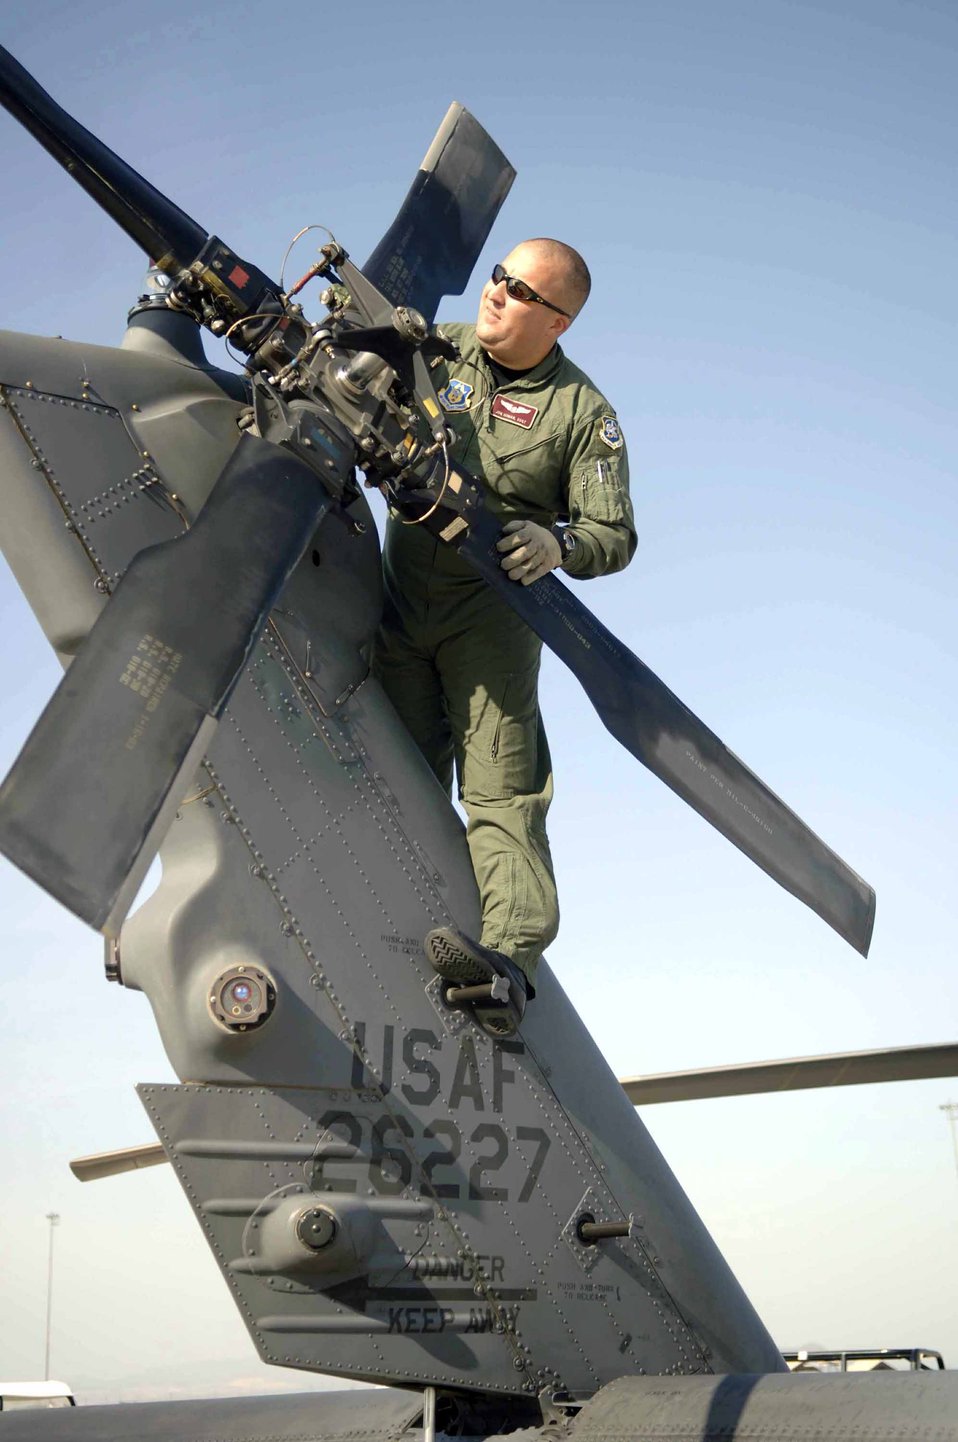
Angel Thunder

Staff Sgt. Jon Homan inspects an HH-60G Pave Hawk before a mission to Gila Bend, Ariz., on July 25 for exercise Angel Thunder. The five-day exercise at Davis-Monthan Air Force Base, Ariz., and other areas is designed to provide realistic combat search and rescue training.